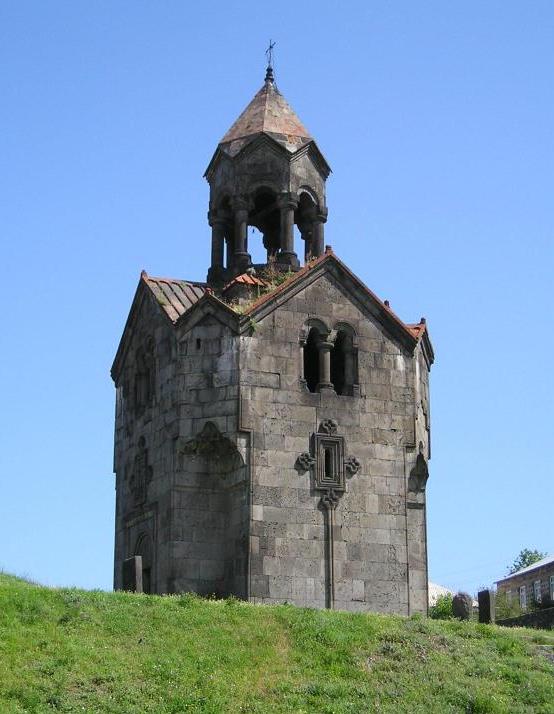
Haghpat-Belltower2